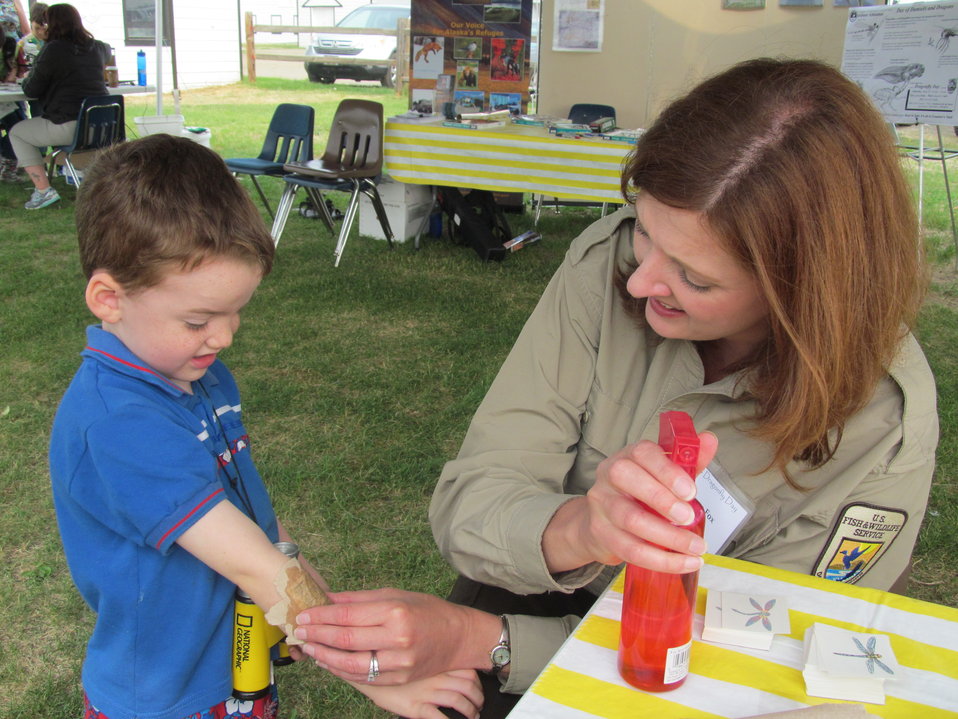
Dragonfly tattoos

(USFWS)